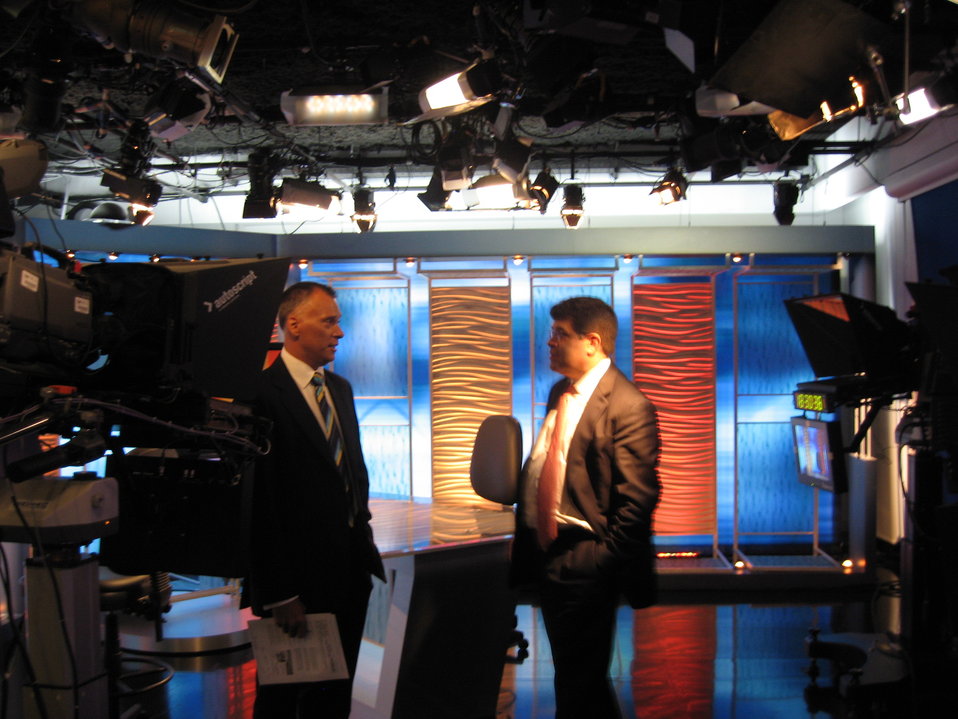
CNN Interview

On Monday, February 15, 2010, CNN International interviewed Deputy Secretary Wolin while in Abu Dhabi.